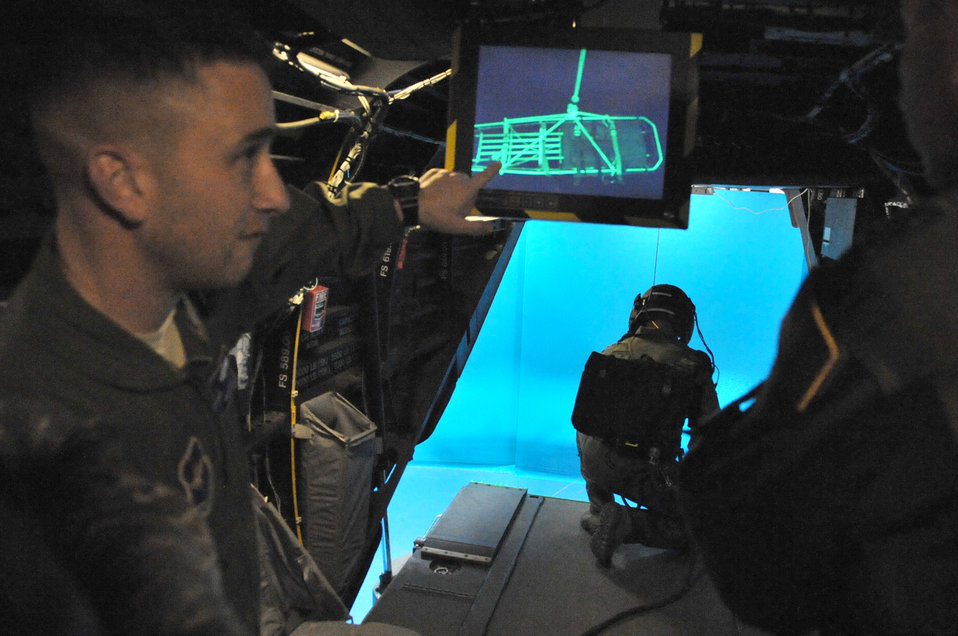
It works like this

Master Sgt. Nicholas Pelhan (left) explains a new rescue simulation device to Maj. Gen. Mark Solo Jan. 12, 2011, at Kirtland Air Force Base, N.M. Sergeant Pelham is assigned to the 58th Training Squadron. General Solo is the commander of 19th Air Force.